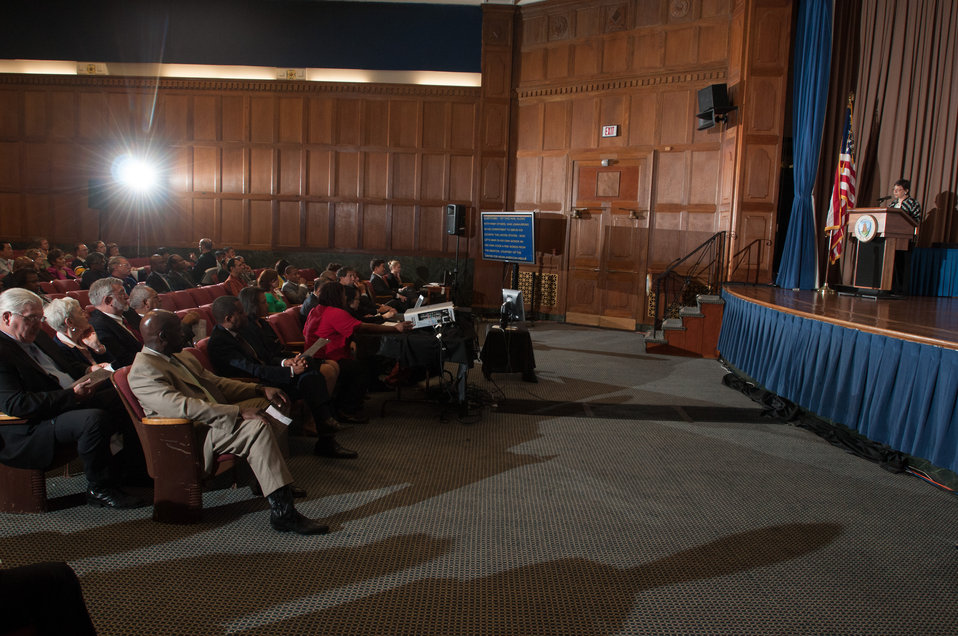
U.S. Department of Agriculture (USDA) Foreign Agricultural Service (FAS) Associate Administrator Janet Nuzum presents a tribute to Senator Daniel Inouye, during the USDA Asian Pacific American Heritage Month Observance, at the USDA headquarters in Washington, D.C., on Thursday, May 23, 2013. This year’s theme is “Building leadership; Embracing the Cultural Values and Inclusions.”